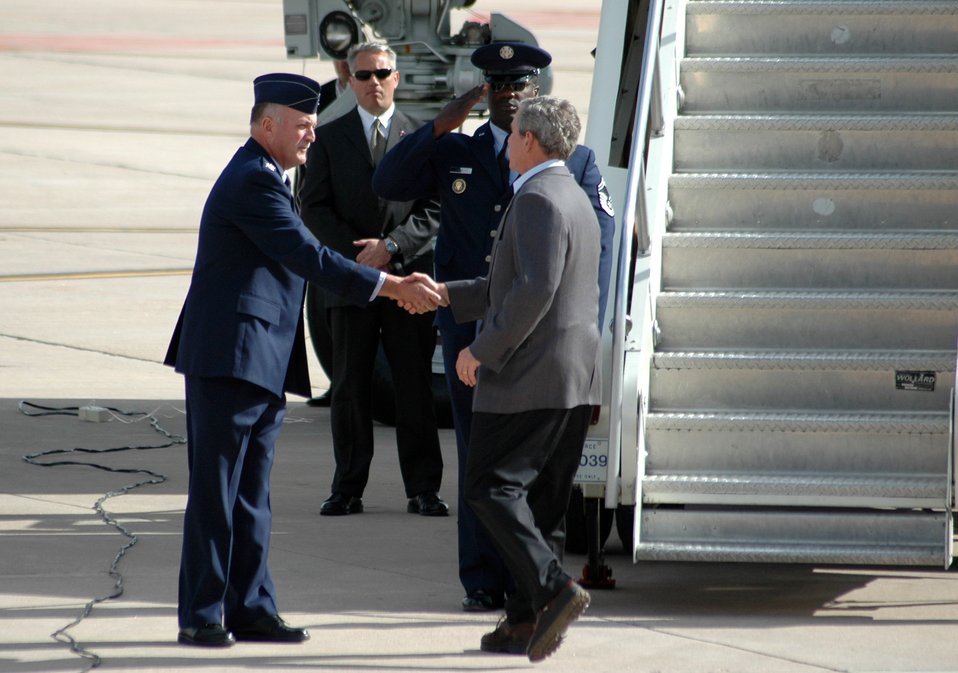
President Bush visits Buckley Air Force Base

President George W. Bush shakes hands 460th Space Wing vice commander Col. Danny Seanger, before flying out of Buckley Air Force Base, Colo., on Nov. 4 after a one-night visit to attend the a political rally.